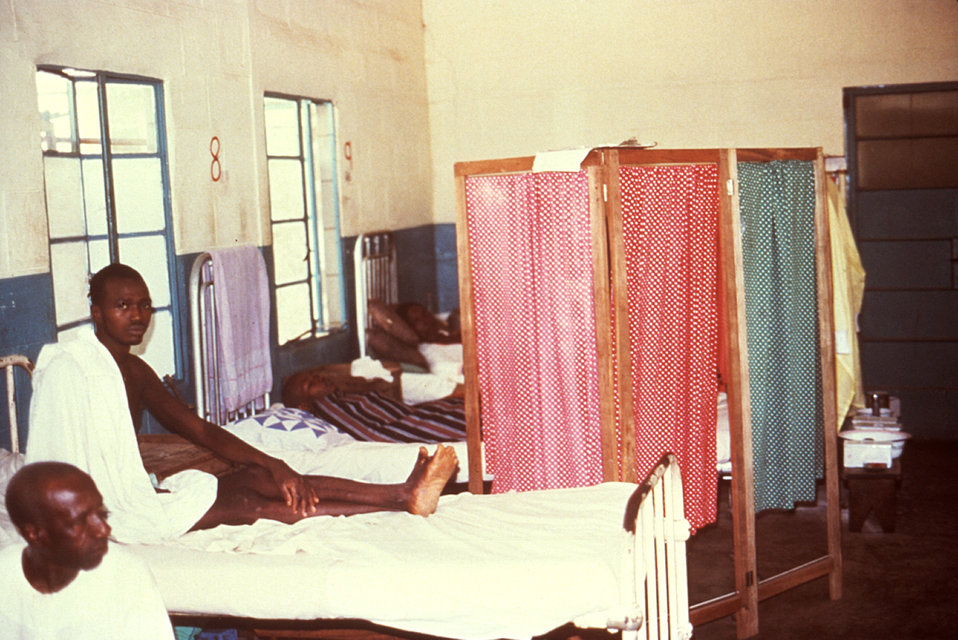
This 1977 image depicts the 'barrier nursing' practiced on the male patient Lassa fever ward in Segbwema, Sierra Leone.